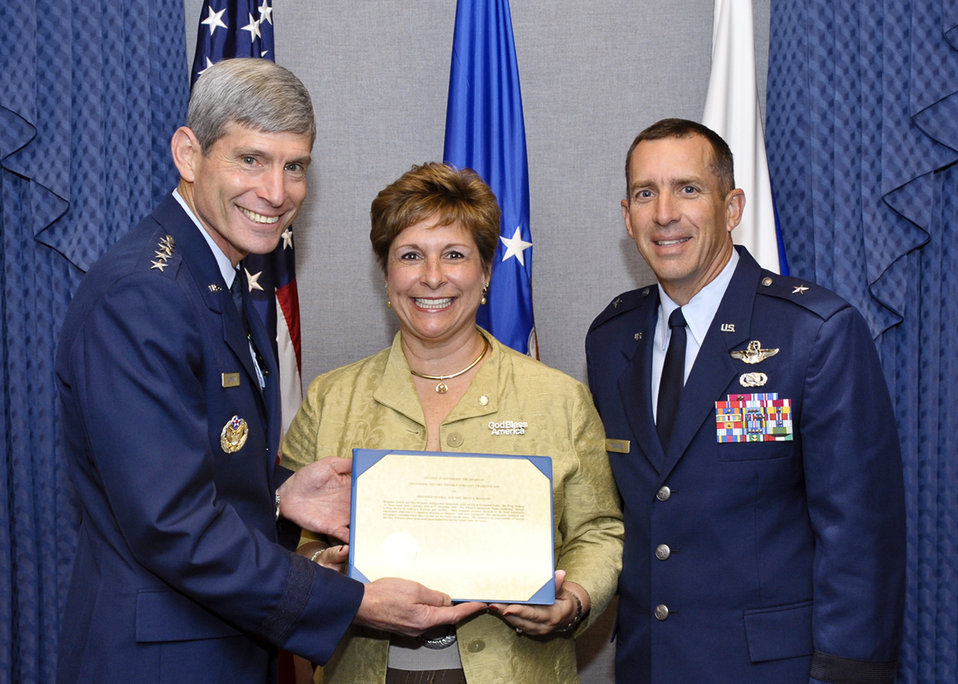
Former Kadena couple receive O'Malley award

Air Force Chief of Staff Gen. Norton Schwartz presents the 2009 General and Mrs. Jerome F. O'Malley Award to Brig. Gen. Brett and Marianne Williams at a Pentagon ceremony Sept. 11, 2009.